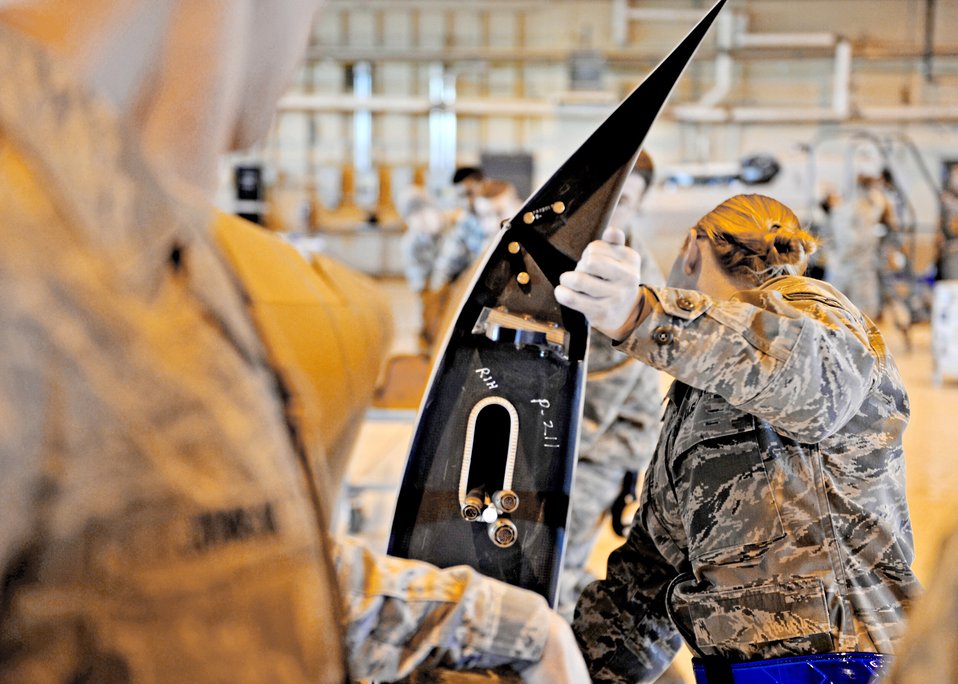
849th AMXS provides eyes in the sky of Haiti

Senior Airman Stephanie Groome assists with placing the right wing of the MQ-1 Predator into a casket for transportation, Jan. 17, 2010, at Holloman Air Force Base, N.M. Airmen disassembled and packaged a Predator for departure in support of Operation Unified Response. Airman Groome is a crew chief assigned to the 849th Aircraft Maintenance Squadron.